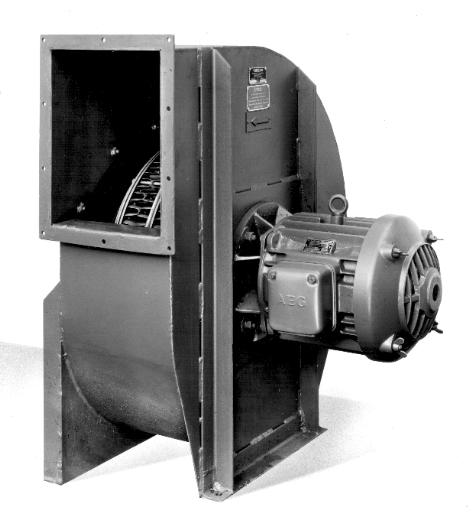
Deutsch: Radialventilator mit Wellring-Laufrad